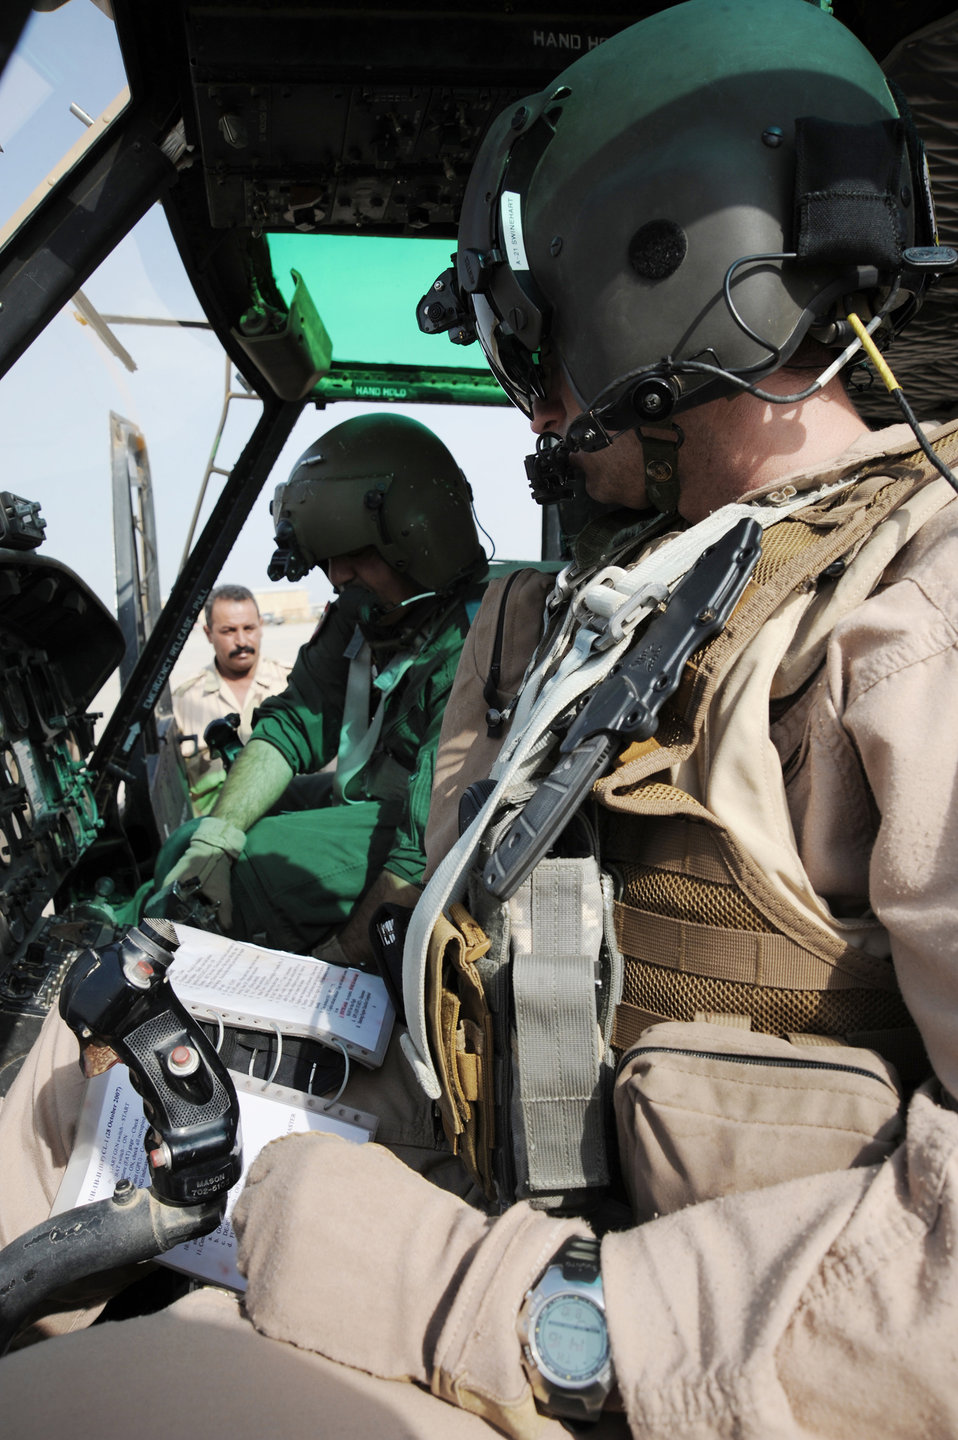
Airmen train, advise, assist Iraqi helicopter pilots

Maj. Jack Swinehart (right), 721st Air Expeditionary Advisory Squadron UH-1H pilot, observes an Iraqi pilot performing preflight procedures here prior to a helicopter training mission Oct. 8, 2009. The major sits side-by-side with Iraqi pilots as they practice approaches, take-offs, landings and aerial maneuver formation flying procedures. U.S. Air Force instructor pilots assigned to the 721st AEAS train, advise and assist Iraqi helicopter pilots around the clock, helping the Iraqis develop their own air force. Major Swinehart is deployed from and a native of Fort Rucker, Ala.